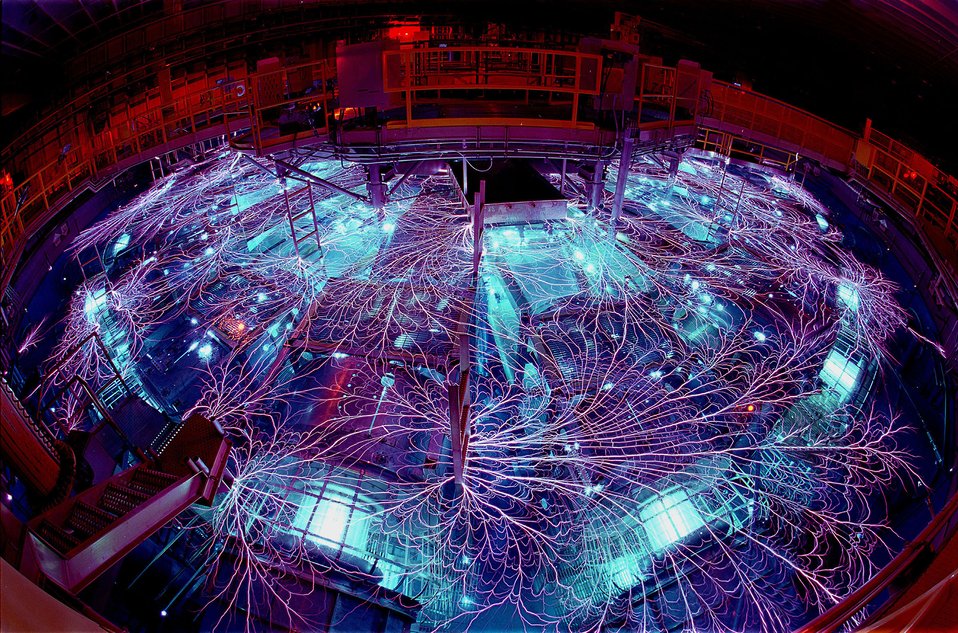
Z- machine at Sandia National Laboratory.

Sandia's machine, the most powerful x- ray generator on Earth, creates temperatures rivaling those of the sun and is helping physicists examine up-close what happens to iron in the grip of black hotels and neutron stars.